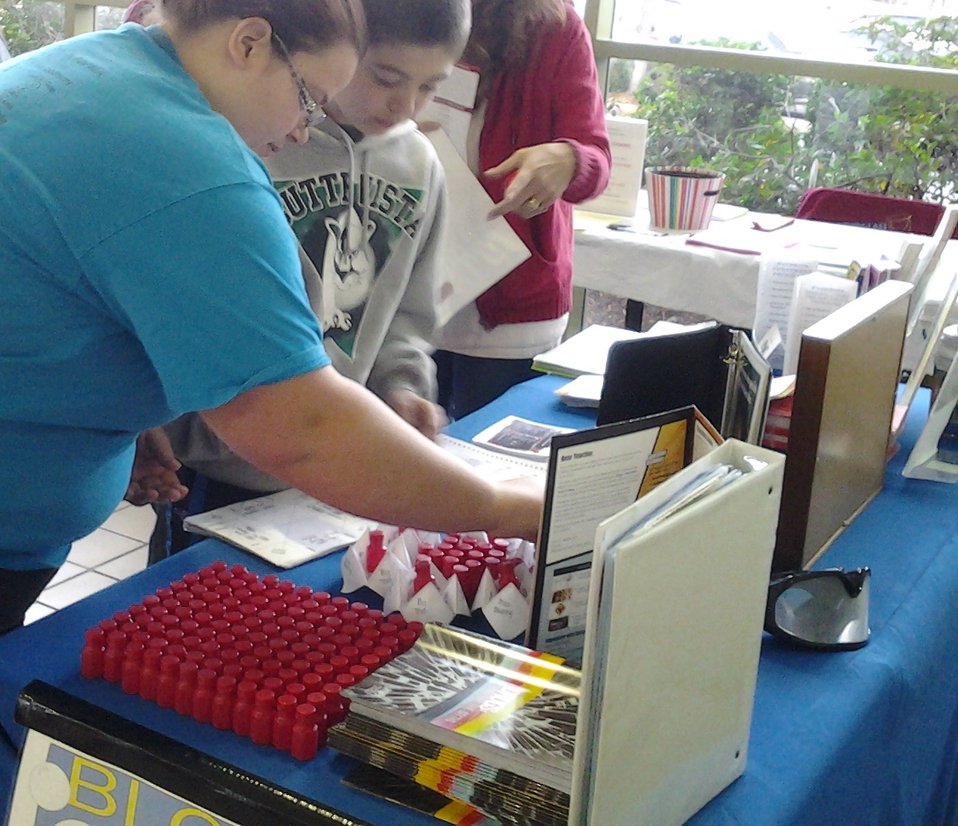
Yuba City's NDFW 2013 Event

Yuba City, CA. Yuba-Sutter Pathways & Substance Abuse Steering Coalition partnered up to offer a booth at the “Bless Your Heart Health Fair “in the Yuba-Sutter Mall.